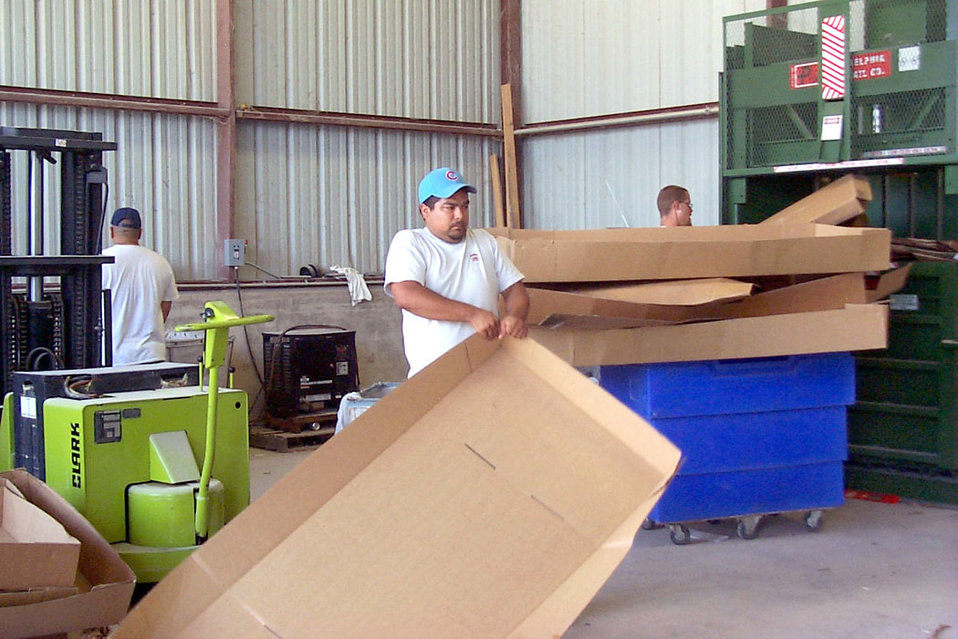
Recycling

RANDOLPH AIR FORCE BASE, Texas -- Members of the ecycling center here bale cardboard as part of the base's profitable recycling efforts. Air Education and Training Command is cashing in on trash, becoming the first federal agency to enter into a cooperative partnership managed by a public recycling marketing group.